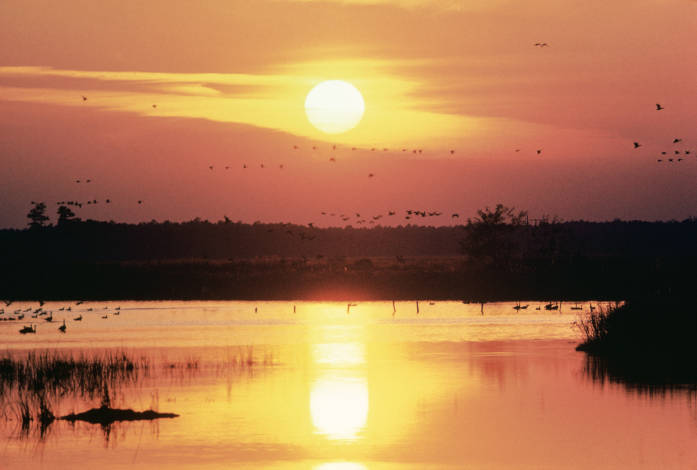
Photo of the Week: Sunset at Blackwater National Wildlife Refuge Cambridge, Maryland

Sunset at Blackwater National Wildlife Refuge from the USFWS National Digital Library: www.fws.gov/digitalmedia